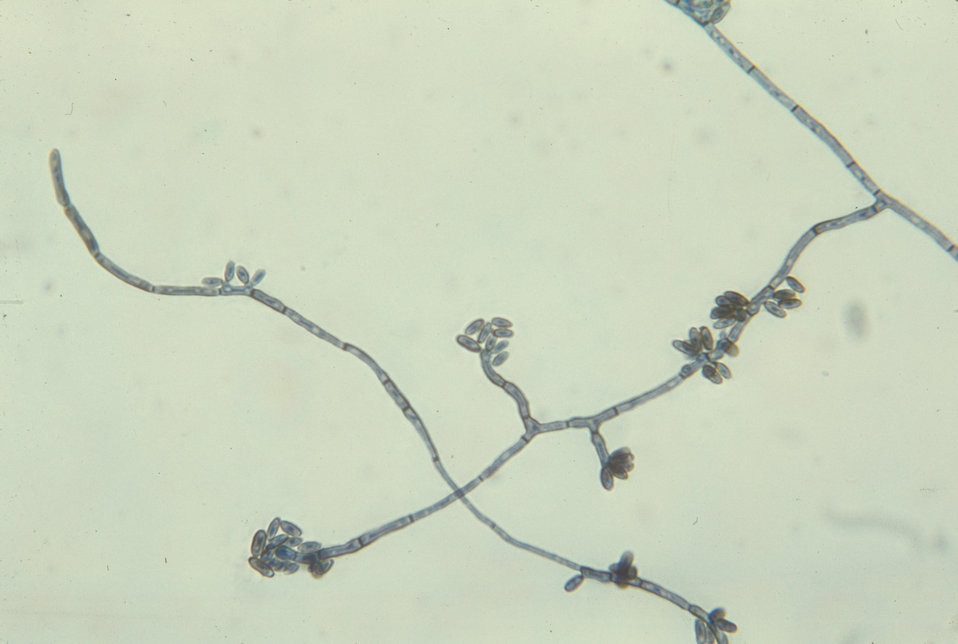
This is a micrograph depicting the fungus Hortaea werneckii, magnified 475X.